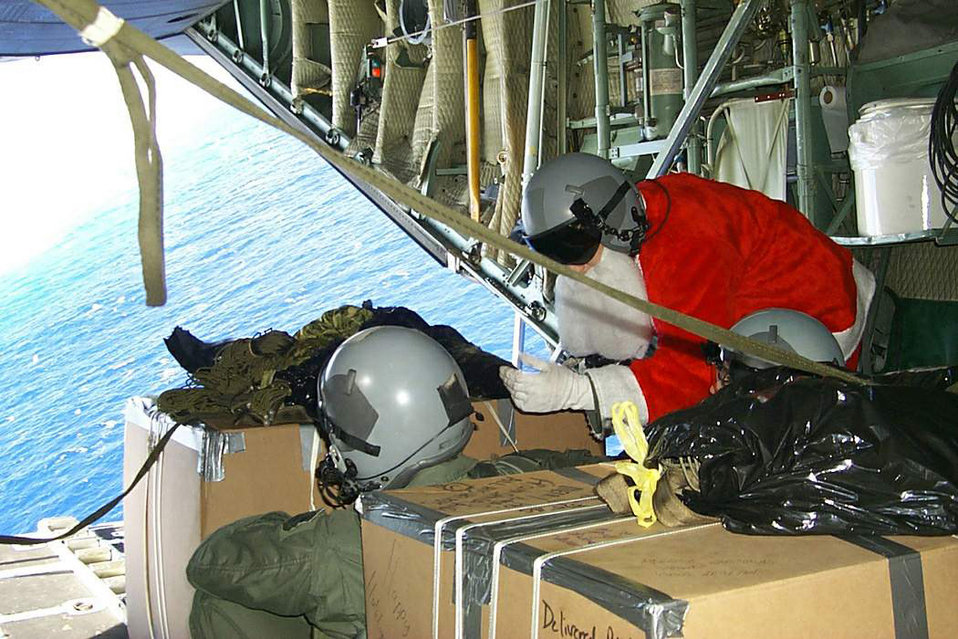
Christmas Drop

FILE PHOTO -- Loadmasters from the 36th Airlift Squadron, Yokota Air Base, Japan, push out cartons of humanitarian supplies from a C-130 Hercules Dec. 12 during the annual Christmas Drop. Andersen Air Force Base organizes and sponsors the annual event that helps the people on more than 56 Micronesian Islands. This is the 48th year the Air Force has conducted Christmas Drop. (Photo Tech. Sgt. Jon Hanson